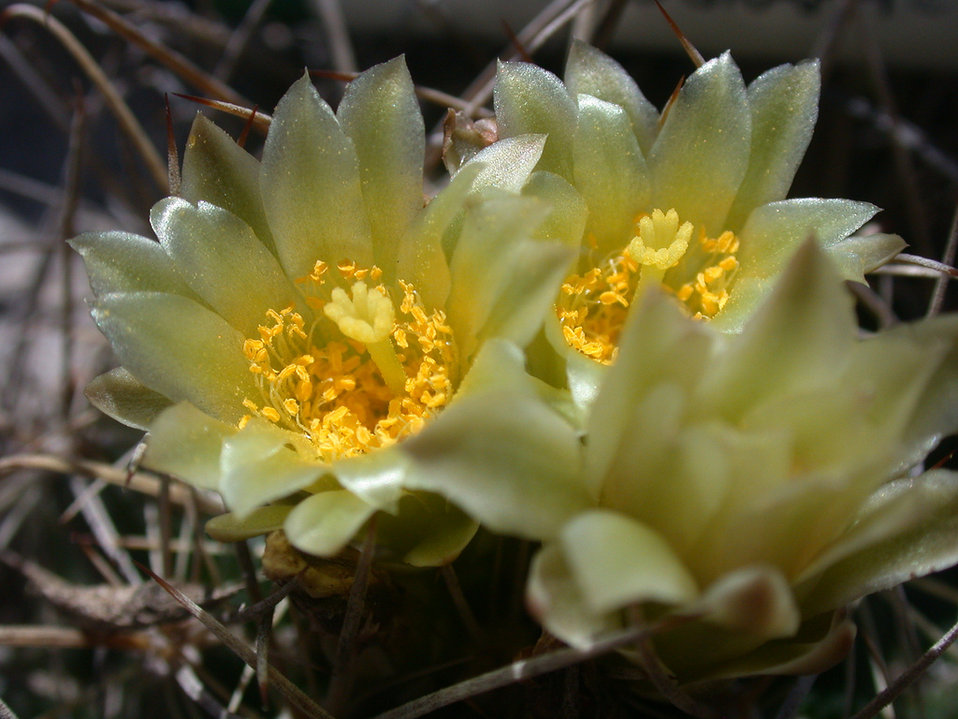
Endangered Tobusch fishhook cactus (Ancistrocactus tobuschii)

Tobusch fishhook cactus flowers.